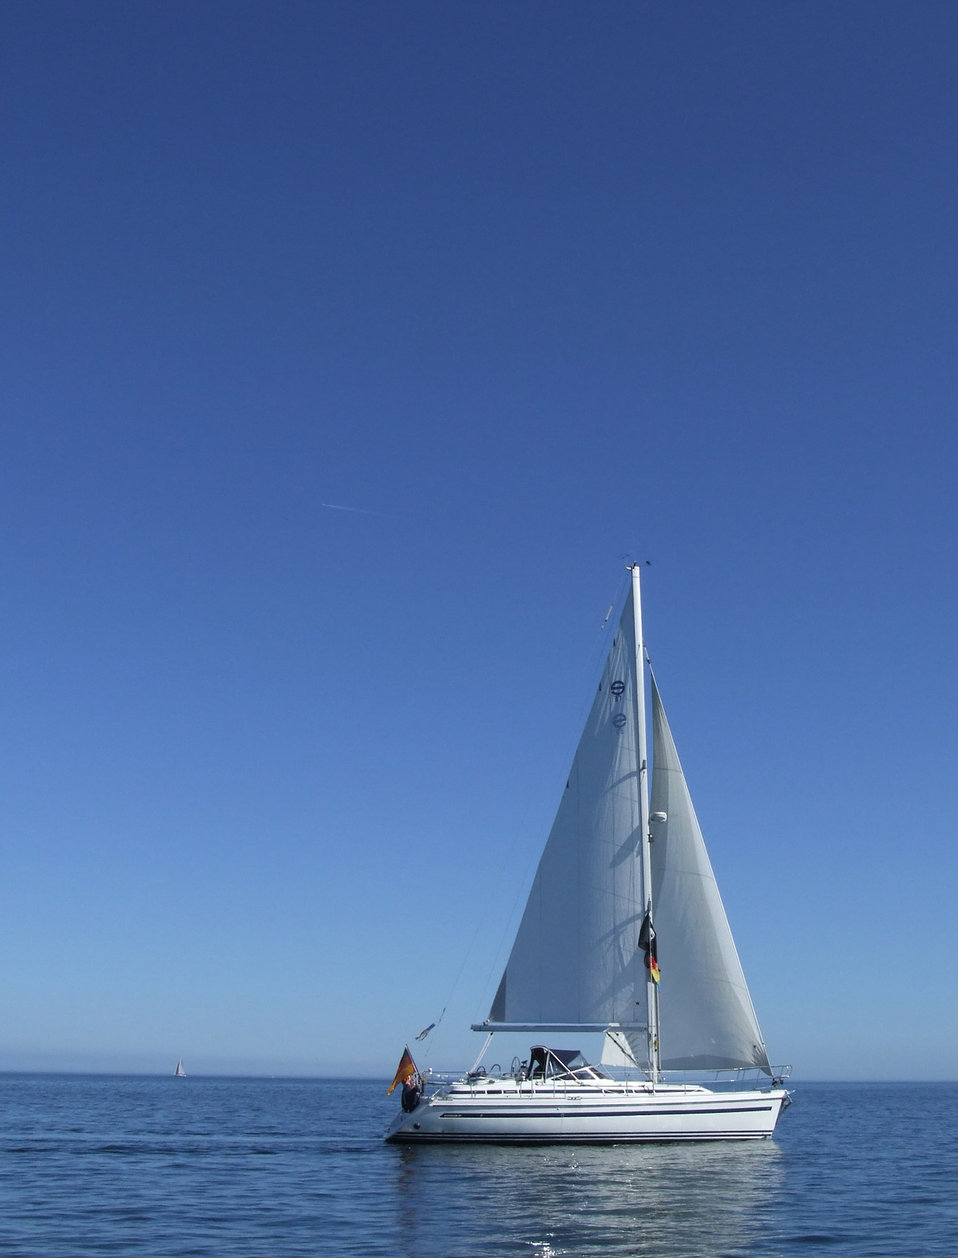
Sailing

Small sailing boat on the baltic sea.